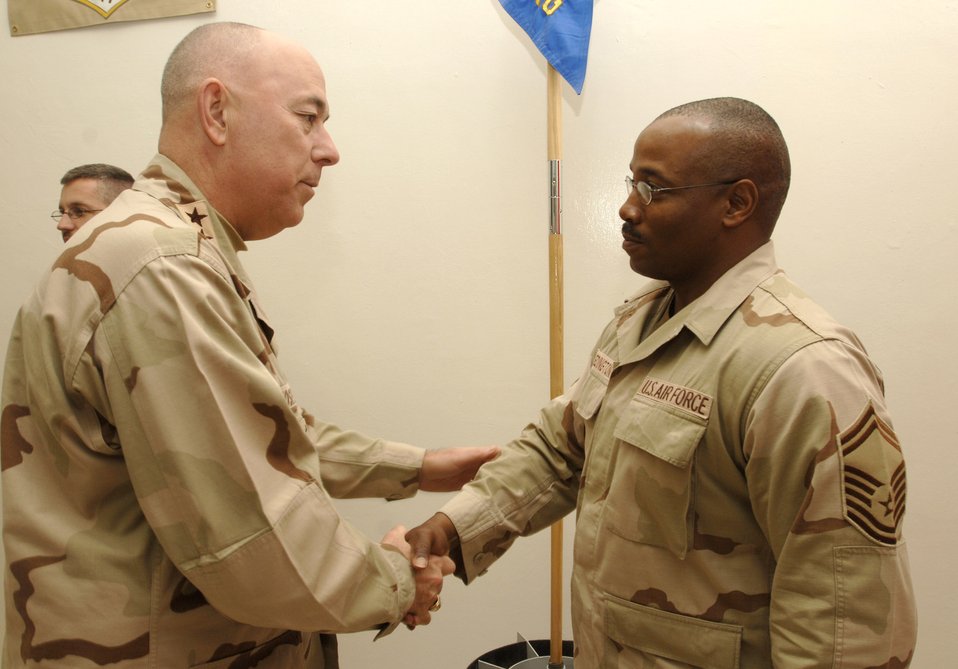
Trip downrange

BALAD AIR BASE, Iraq (AFPN) -- Chief of Staff of the Air Force Gen. T. Michael Moseley shakes hands with Senior Master Sgt. David Wedington during a visit here. Sergeant Wedington is with the 732nd Expeditionary Logistics Readiness Squadron.